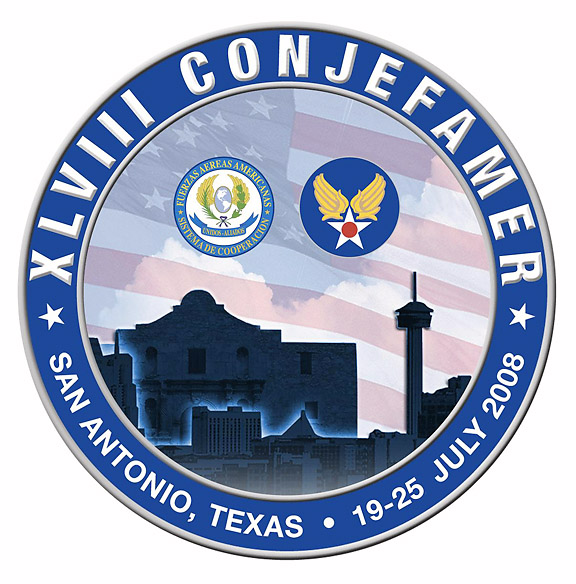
18 nations gather for Conference of the American Air Chiefs

Air chiefs and representatives from 18 Western Hemisphere nations gathered for the 48th annual Conference of the American Air Chiefs to San Antonio in July.